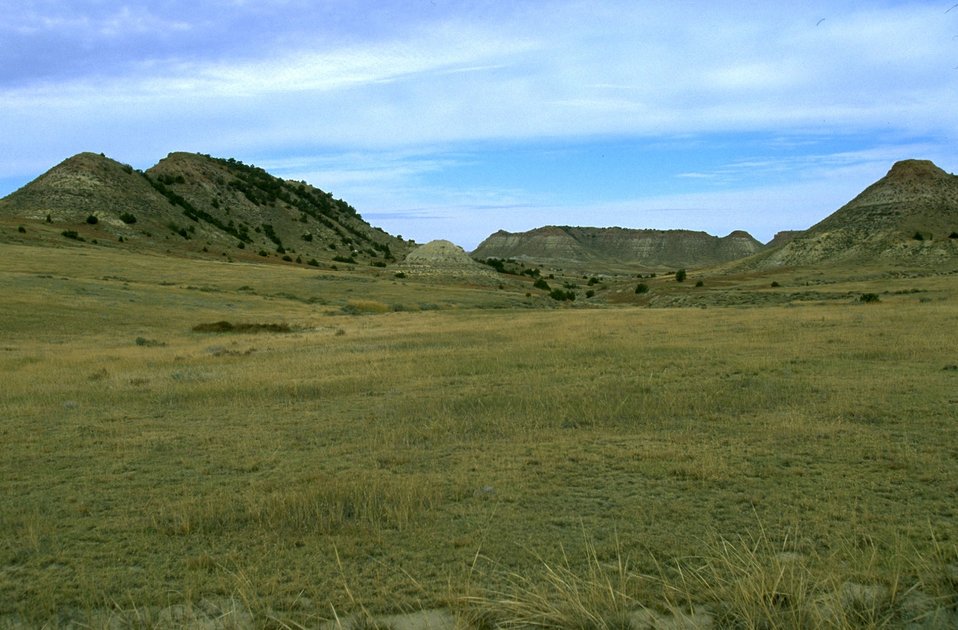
Grassy valley below hills in the Terry Badlands